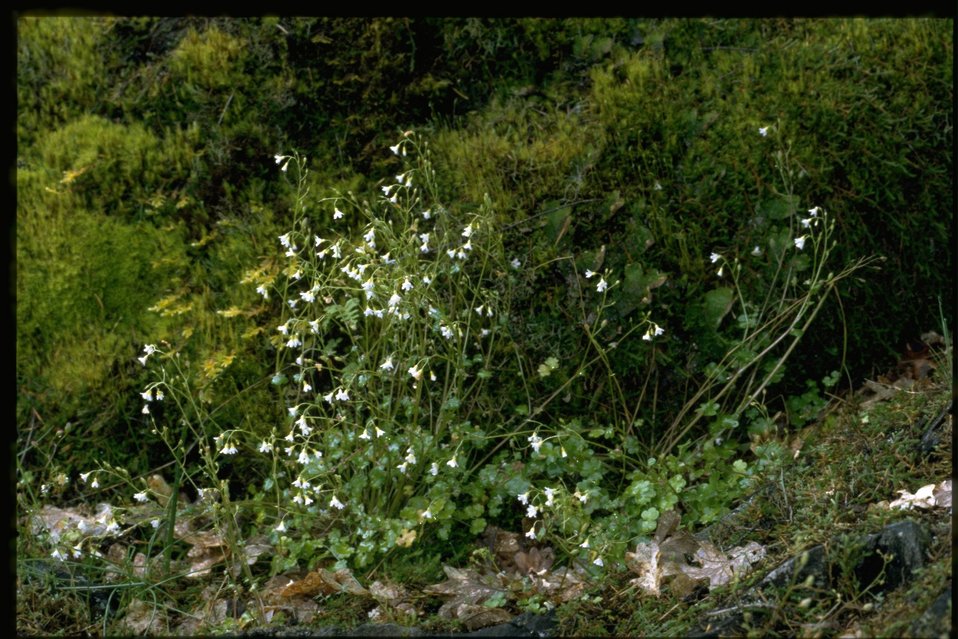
Farshot of Romanzoffia sitchensis.